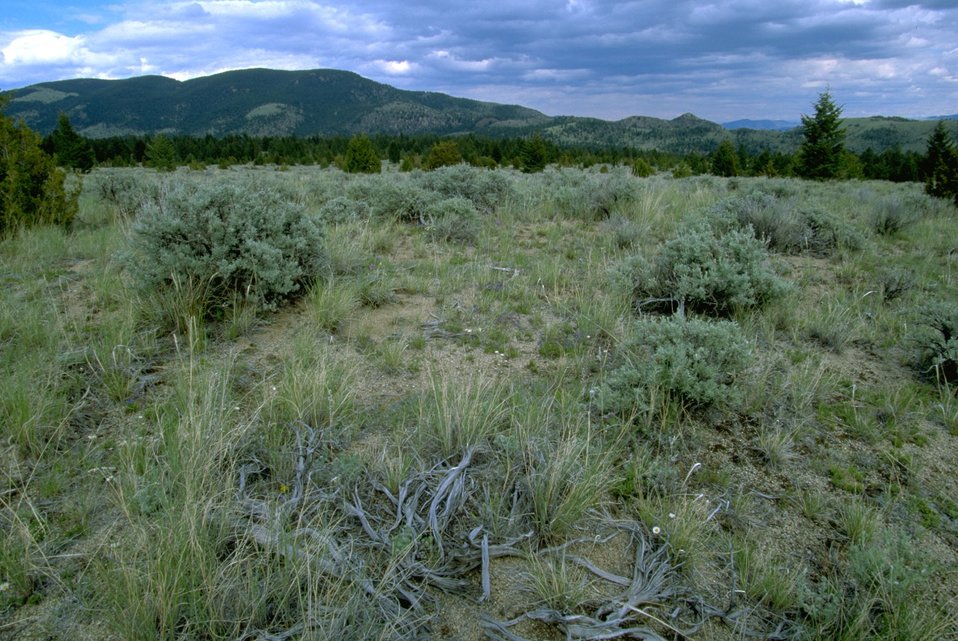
Sagebrush field